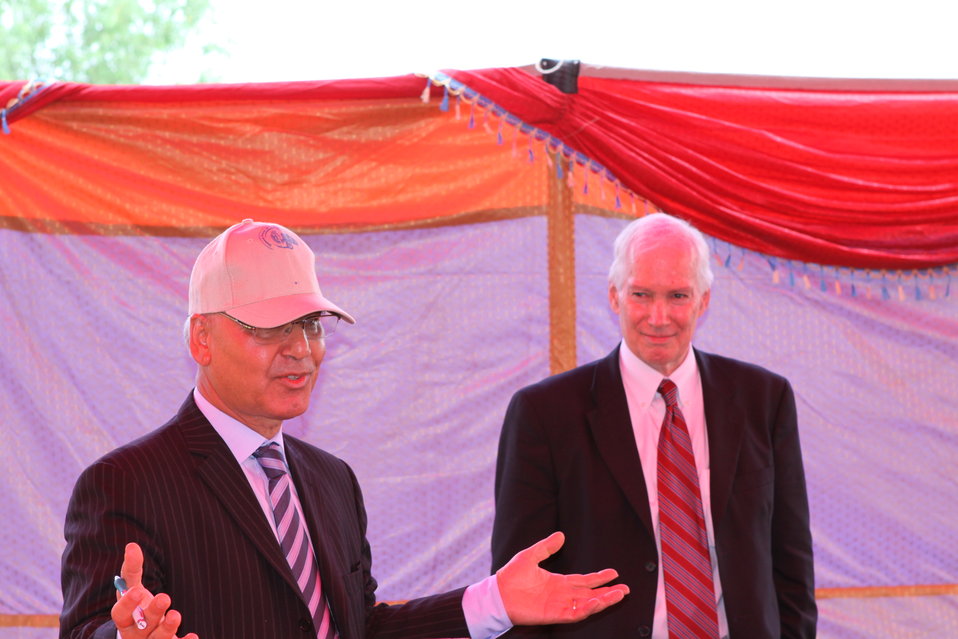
100526 AUAF Graduation 391